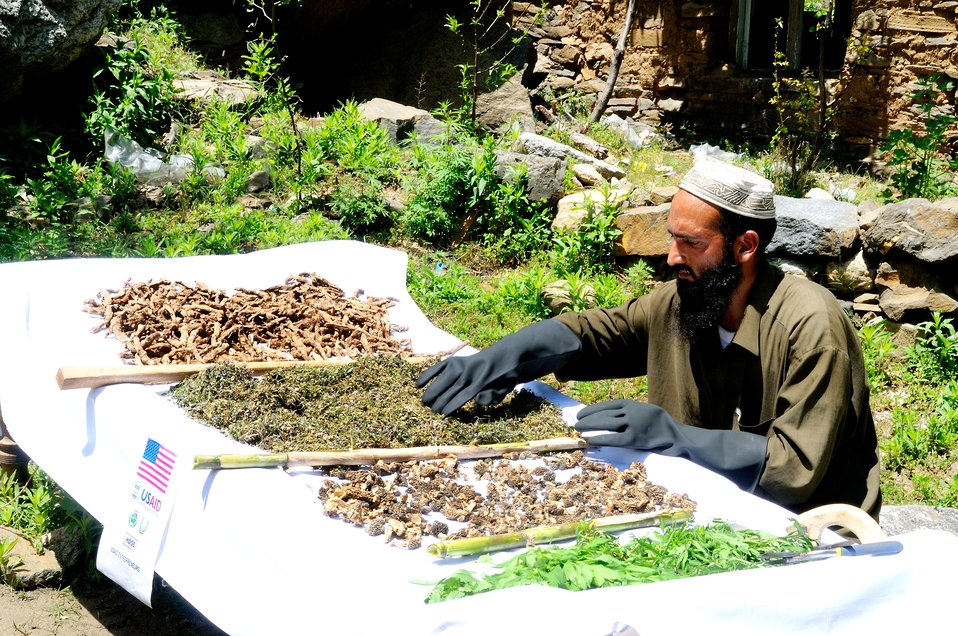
Adding value

Swat, May 22, 2012 - More than 10,500 medicinal plant collectors in Swat and Upper Dir are benefiting from USAID's training and overall facilitation under its value chain work to improve the quality of their end products and in identifying new markets